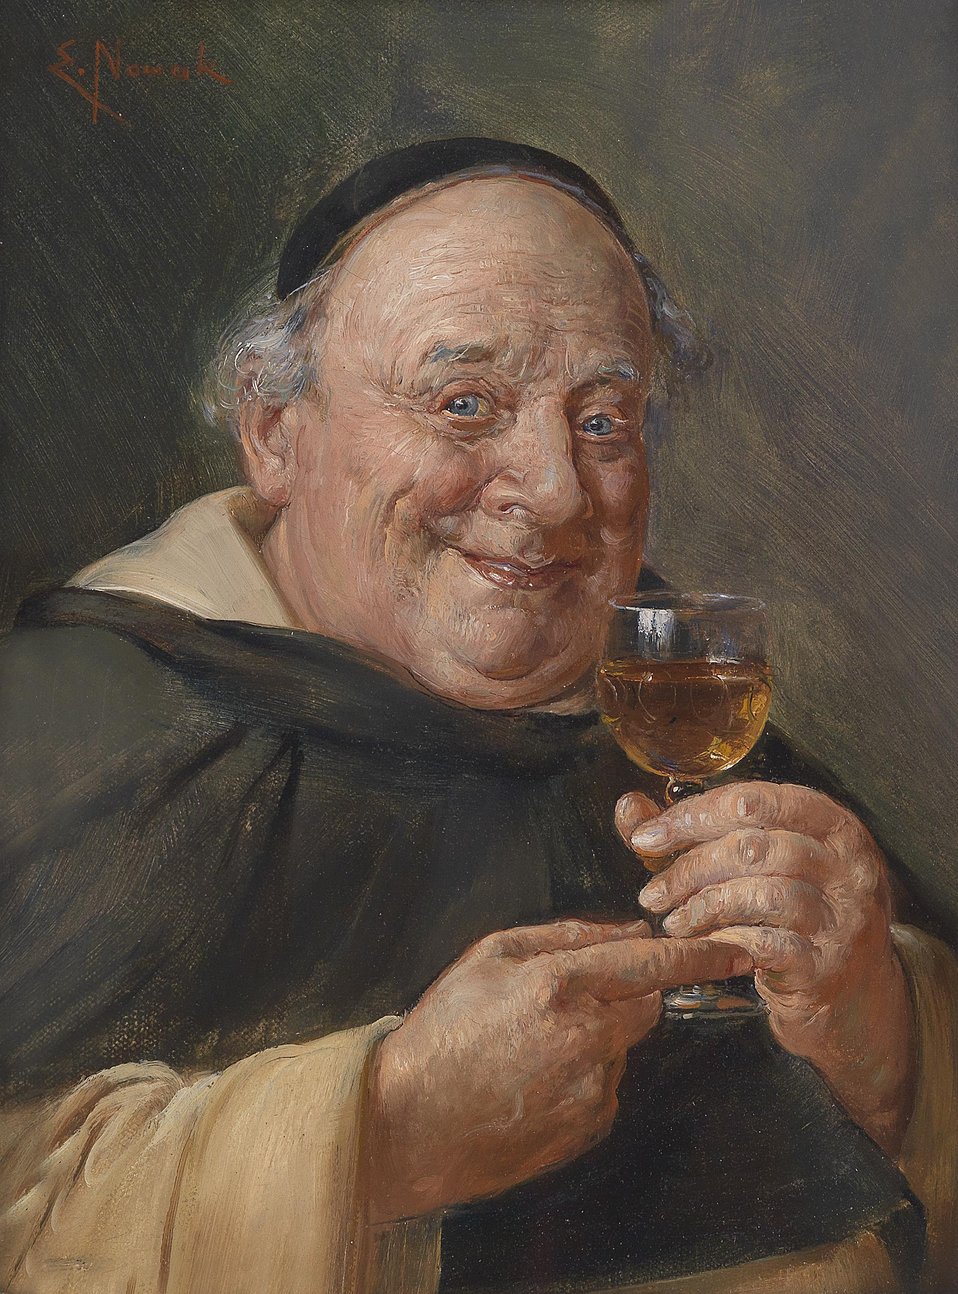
Ein guter Schluck!, signiert E. Nowak, Öl auf Leinwand, 21 x 16 cm